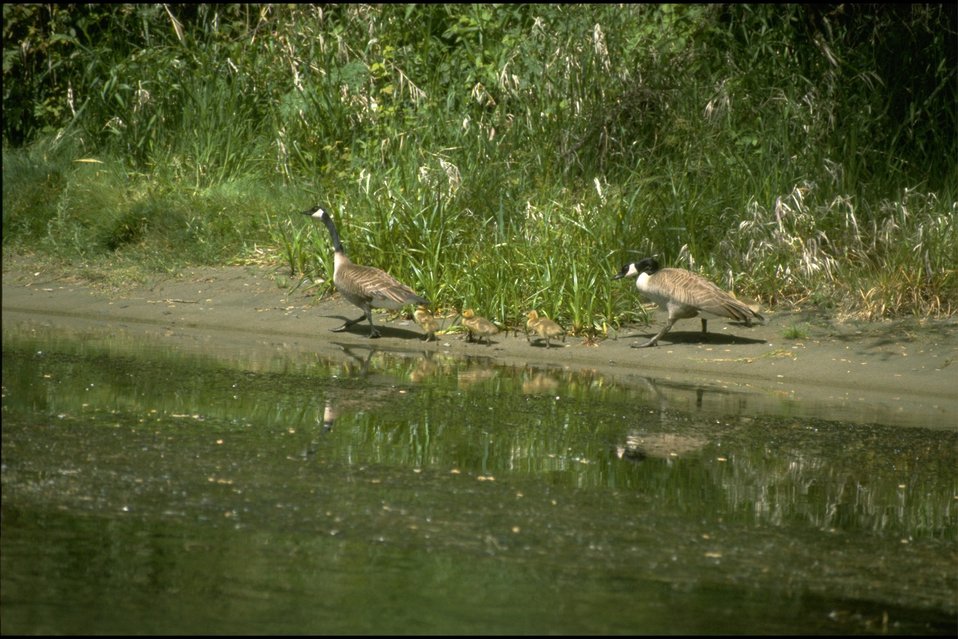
Rogue River - Canadian Geese.